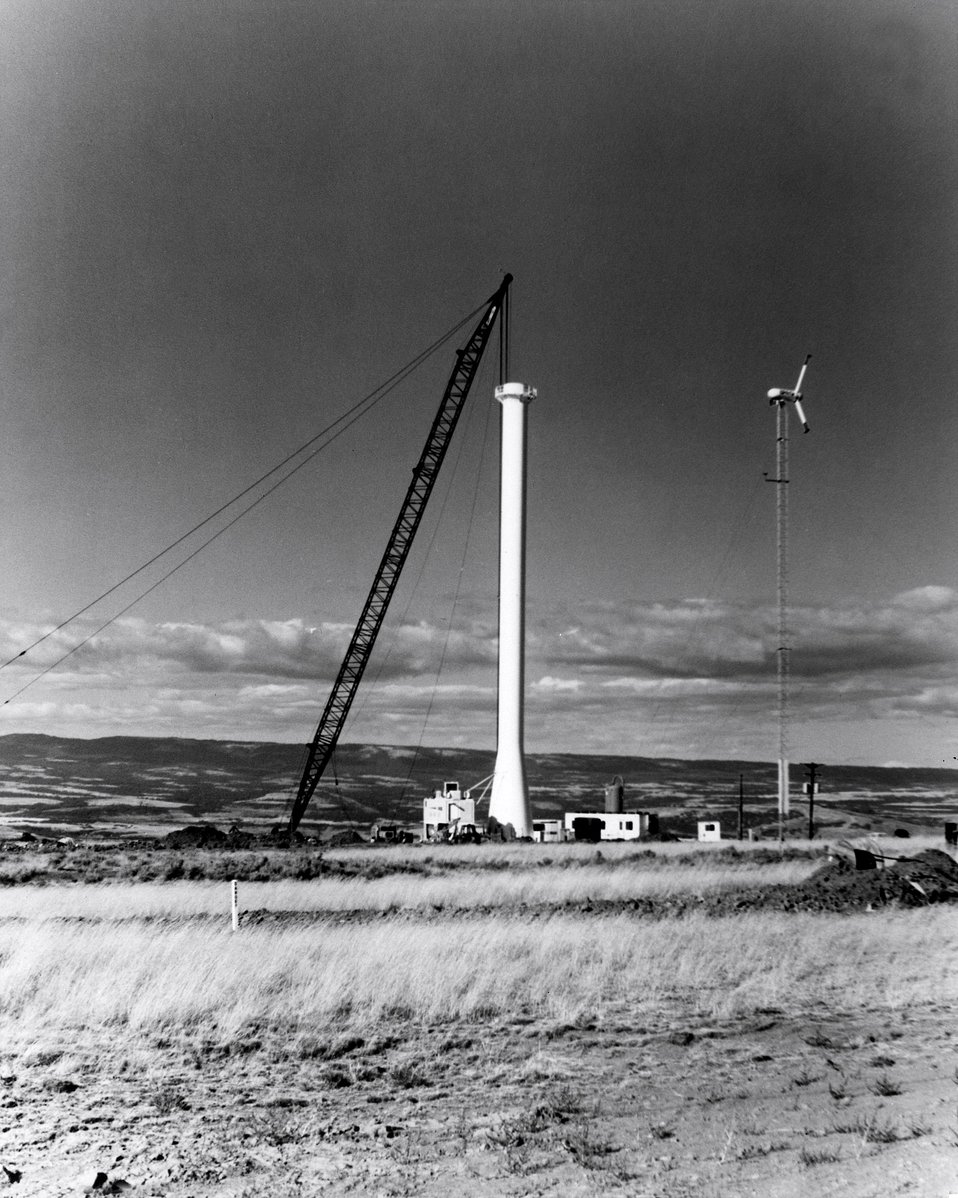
The Nation's first large experimental windfarm consisting of three machines each producing 2.5 magawatts (million watts), was officially dedicated May 29, 1981, at Goodnoe Hills, Washington. c. 1981